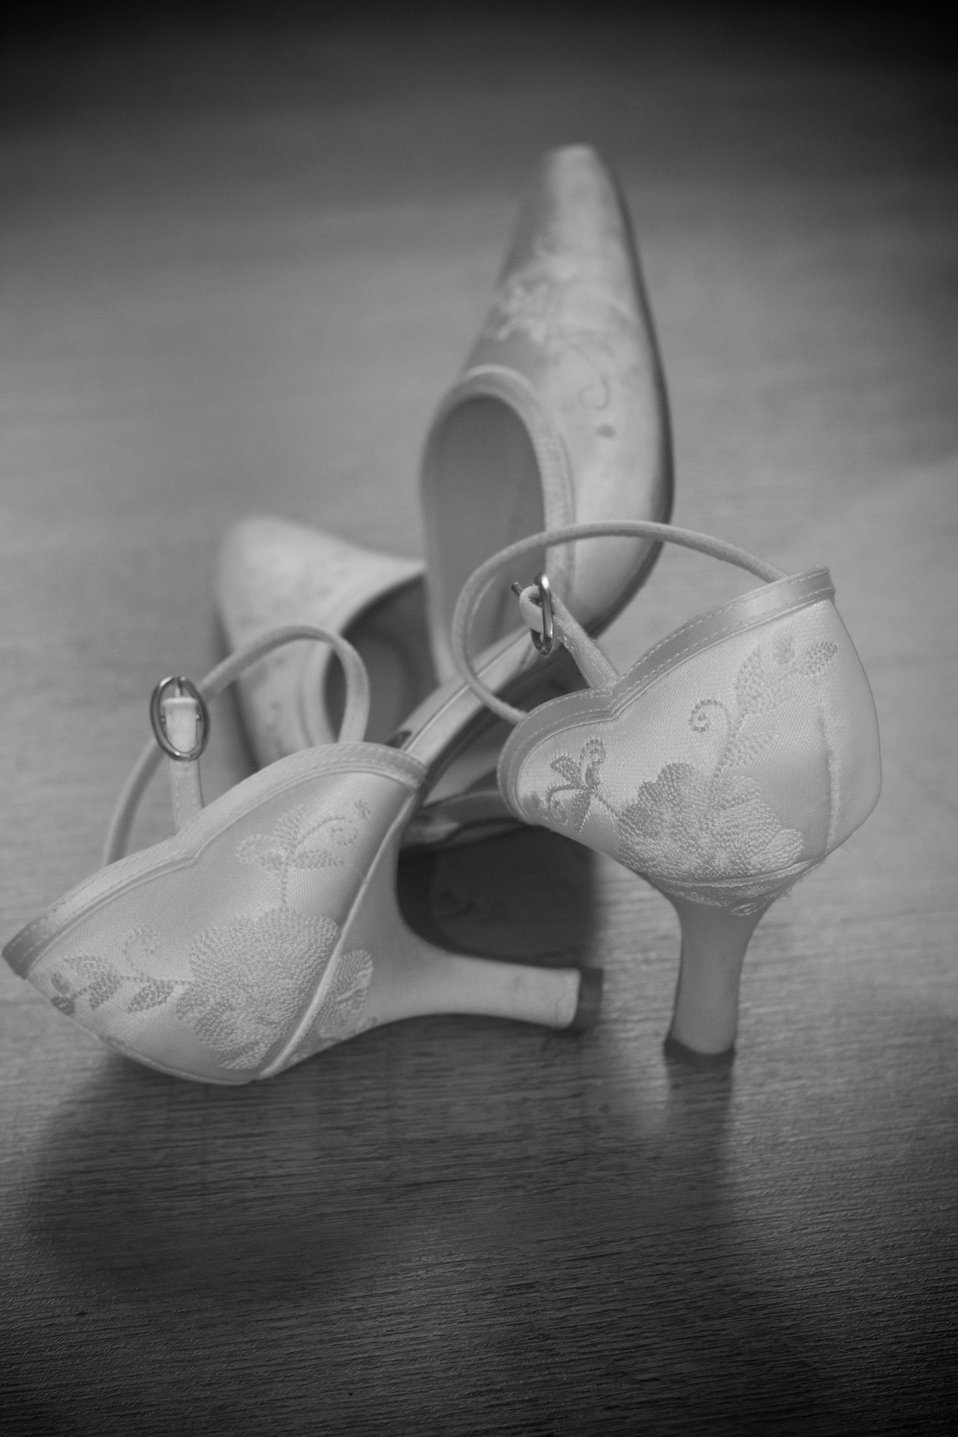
Wedding shoes.